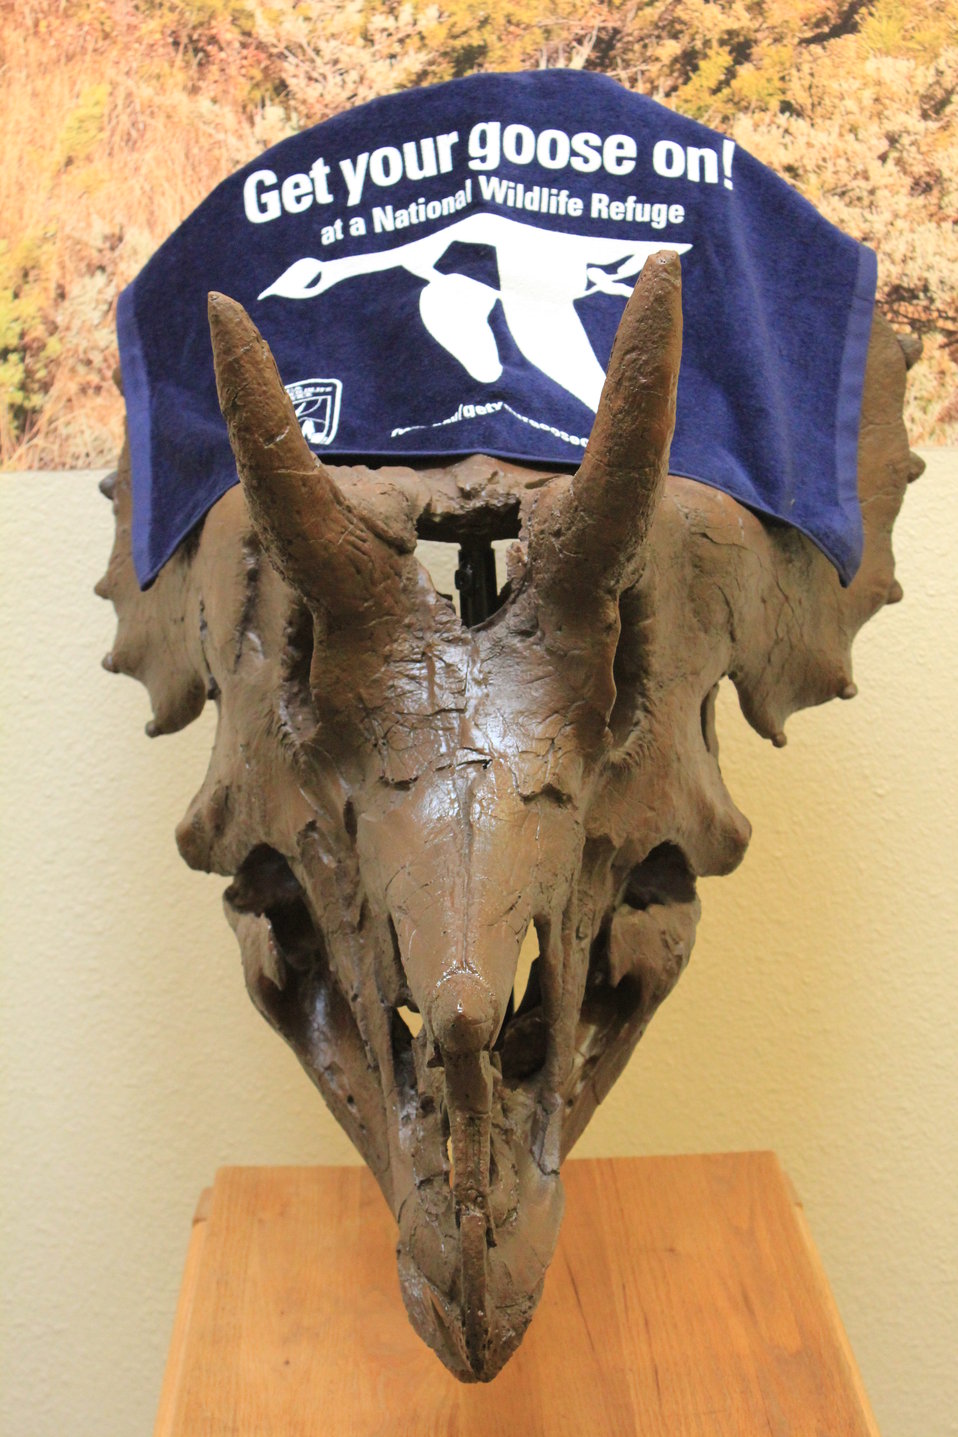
Get Your Goose On! - Triceratops Style